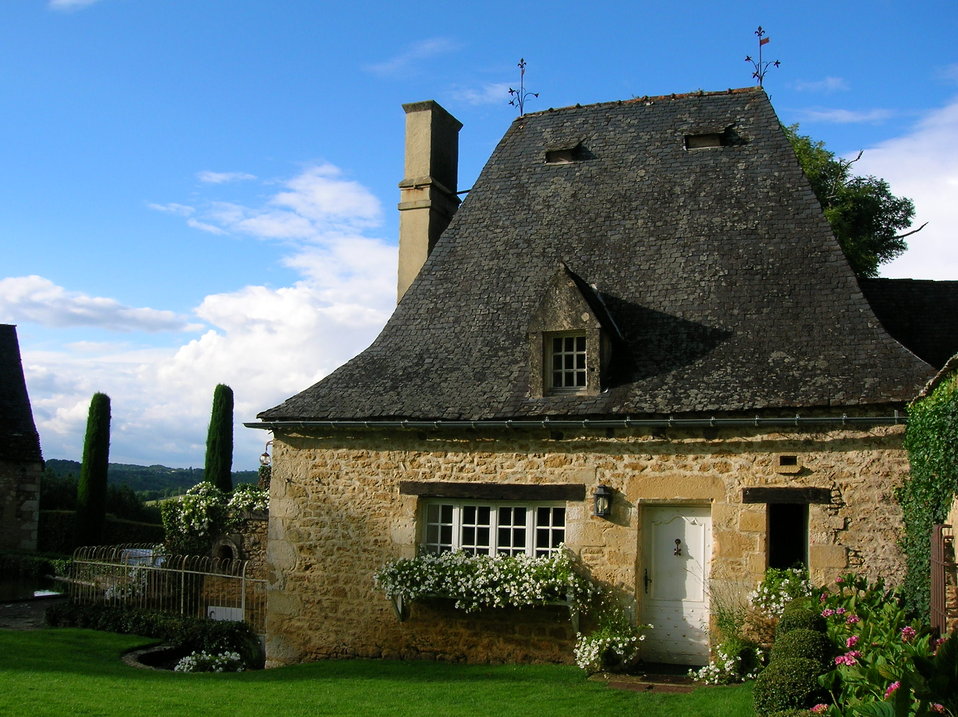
Eyrignac Manor, in Dordogne (France) Fran√ßais†: Manoir d'Eyrignac, en Dordogne (France)